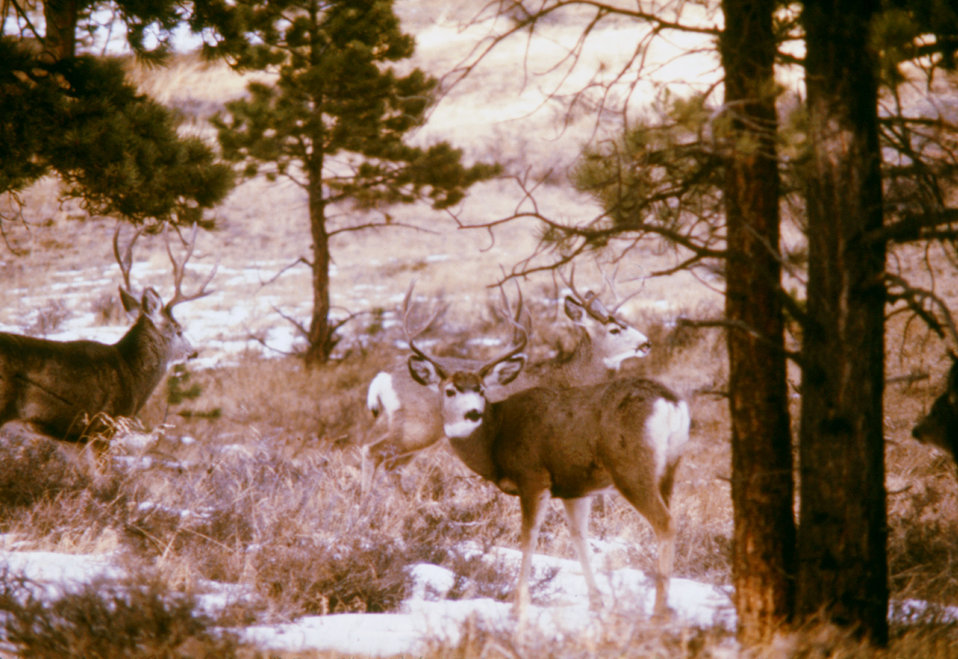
These are mule deer, Odocoileus hemionus, the major host of the adult winter ticks, Dermacentor albipictus.